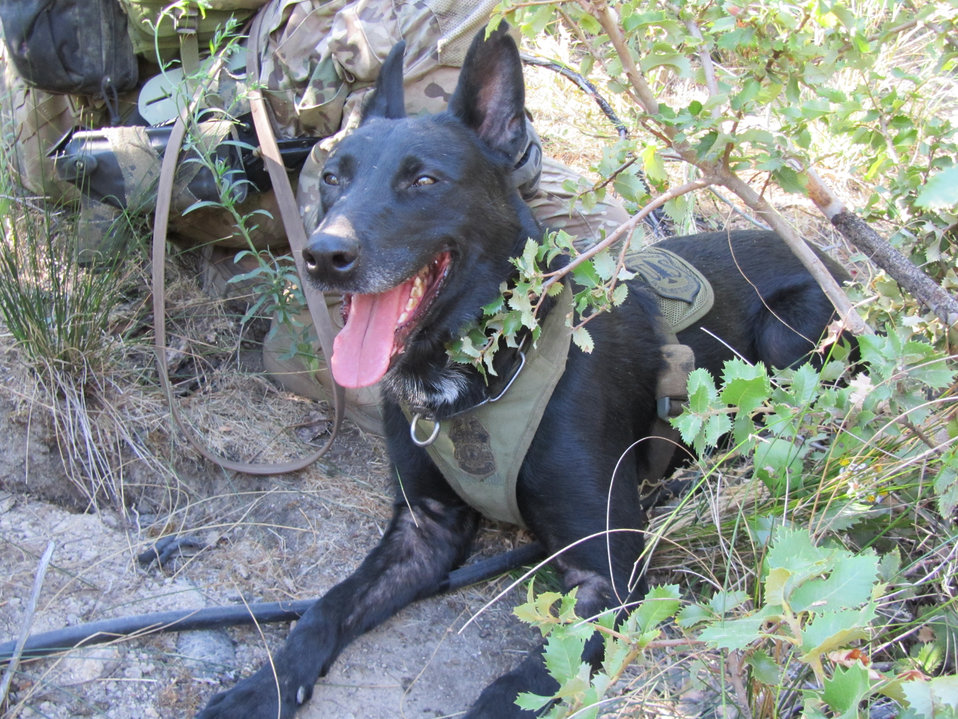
K9 3

Jacky, a 6 ½ -year-old Belgian Malinois, and her human partner Paul Zohovetz patrol the Lassen National Forest in California.